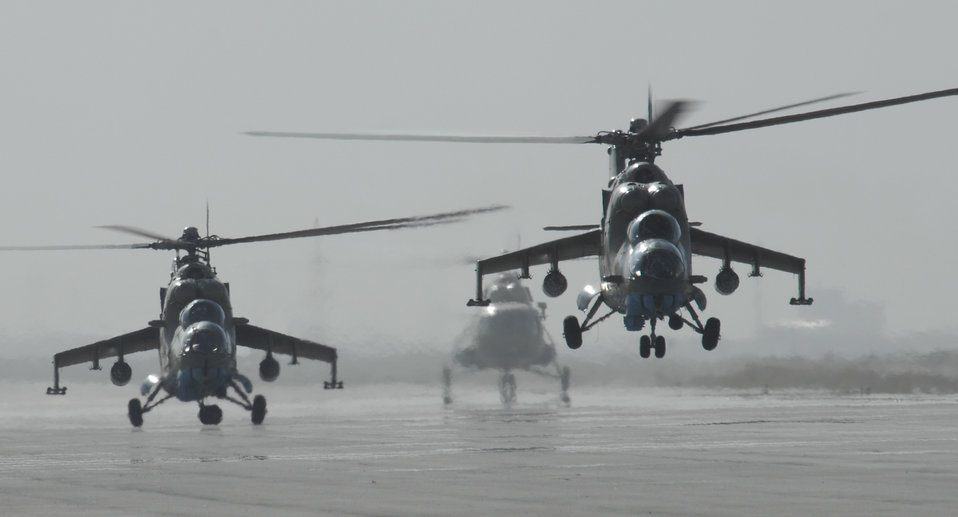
Importance of airpower for Afghanistan

Two MI-35 attack helicopters from the Afghan National Army Air Corps launch from the airport in Kabul, Afghanistan, on a gunnery training mission May 27 as another ANAAC MI-17 transport lands in the background. This mission was the first time rockets have been flown by the Afghan air corps in more than eight years and will eventually allow the Afghans to provide their own close-air support.